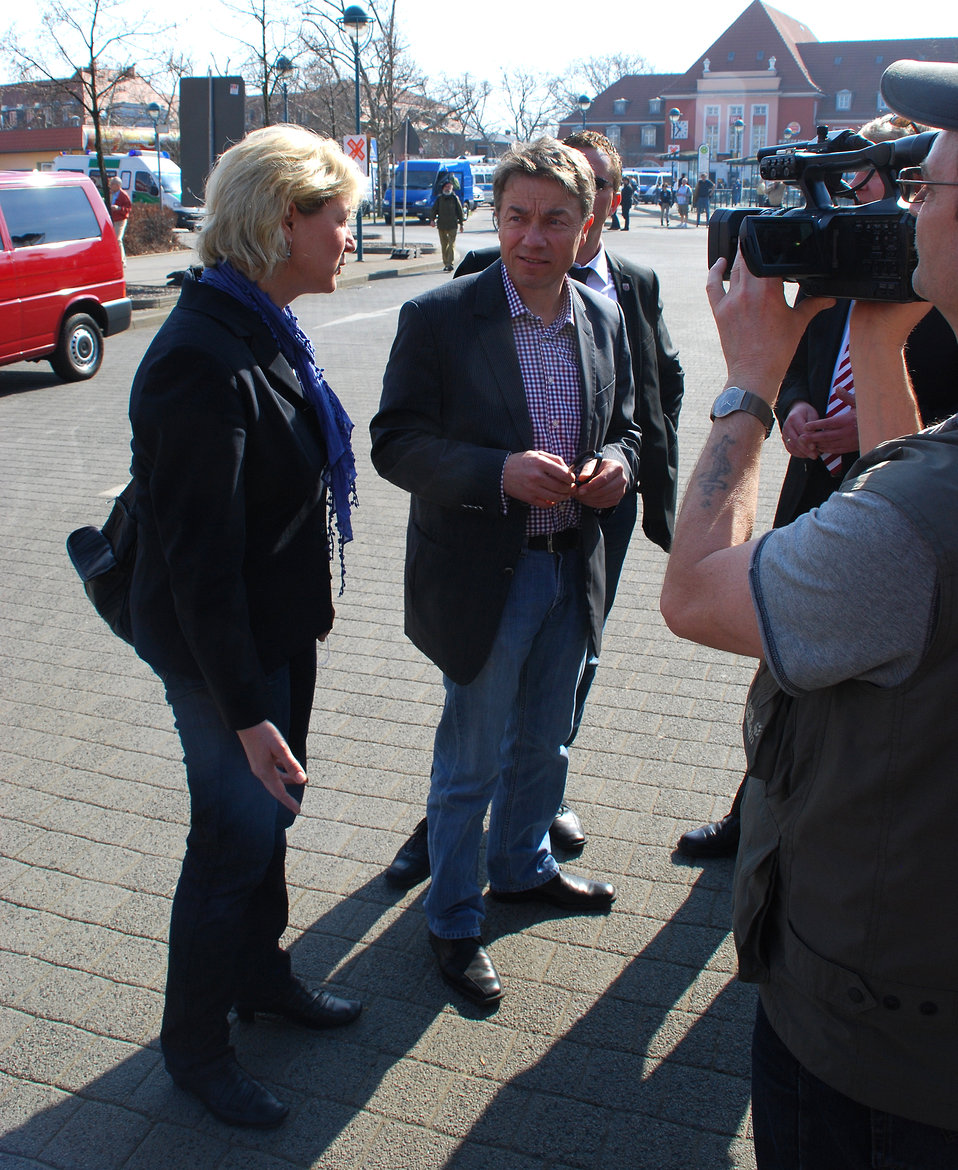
Proteste gegen den Nazi-Aufmarsch am 24.3.2012 in Frankfurt (Oder), mit Günter Baaske, Minister für Arbeit, Soziales, Frauen und Familie des Landes Brandenburg und Claudia Possardt, Kämmerin der Stadt Frankfurt (Oder)